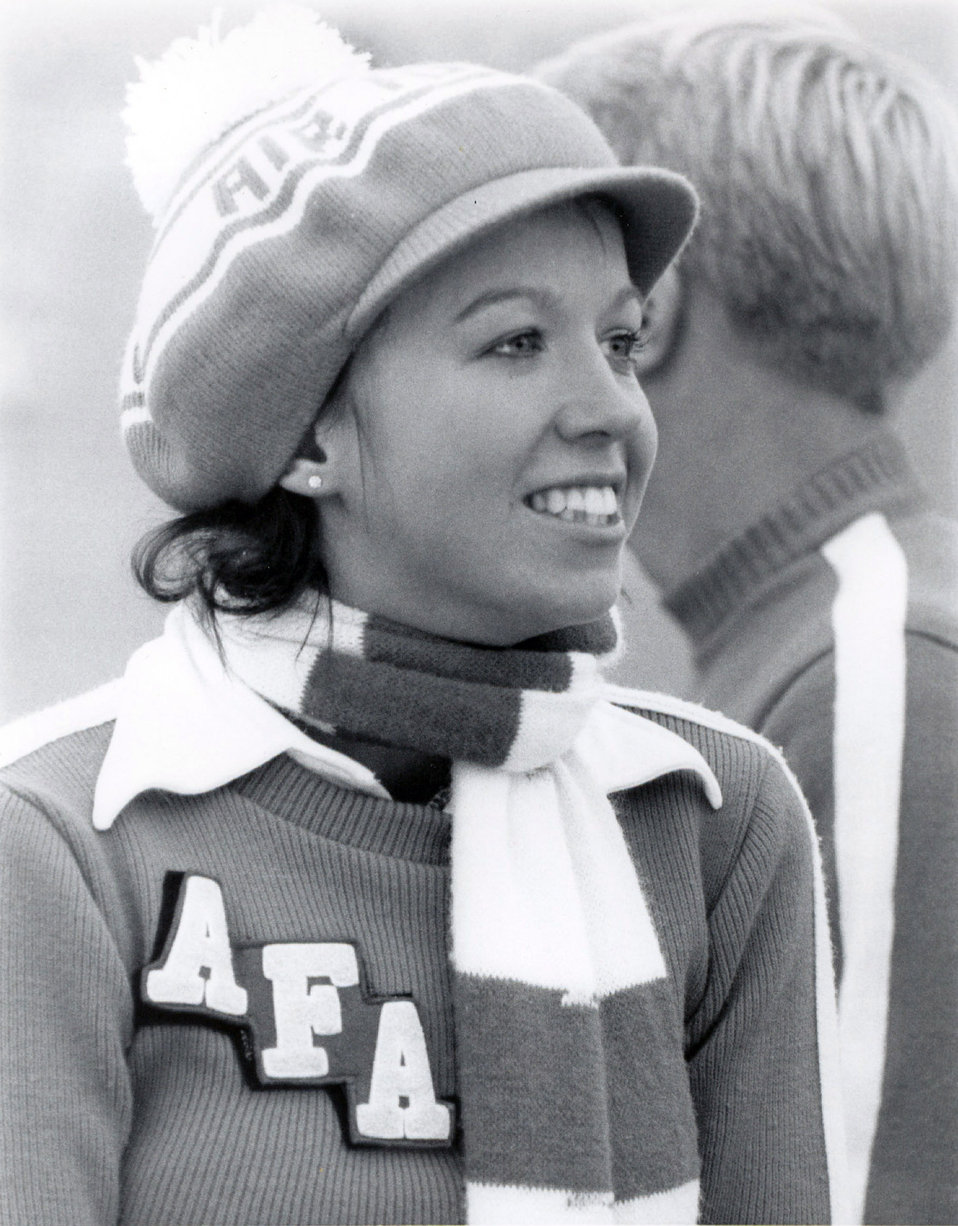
A woman of many firsts

Brig. Gen. Allison Hickey, then Cadet 2nd Class Allison Hilsman, is shown at the 1978 U.S. Air Force Academy vs. Notre Dame football game.